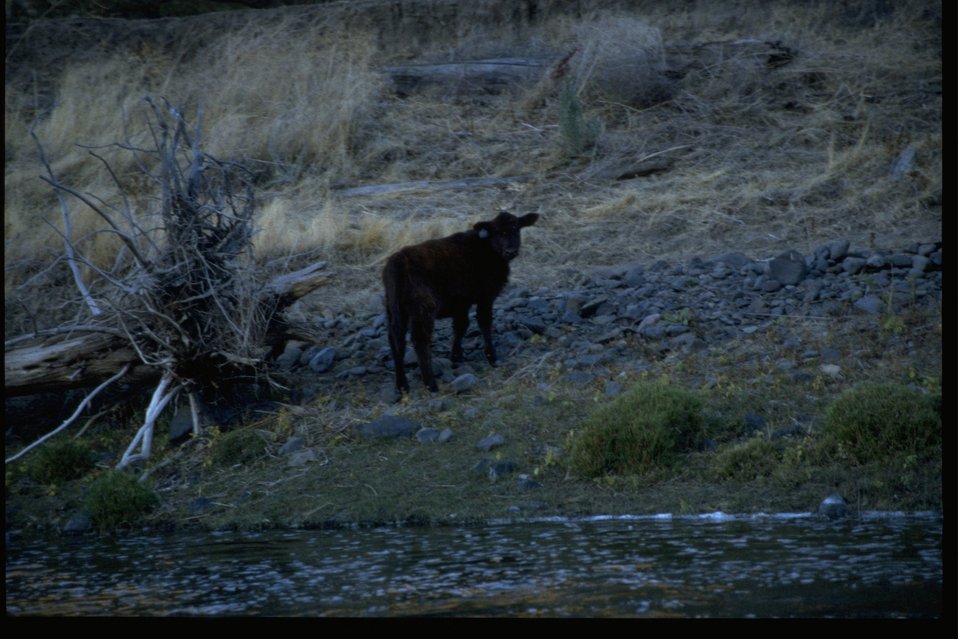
A cow along the John Day River.